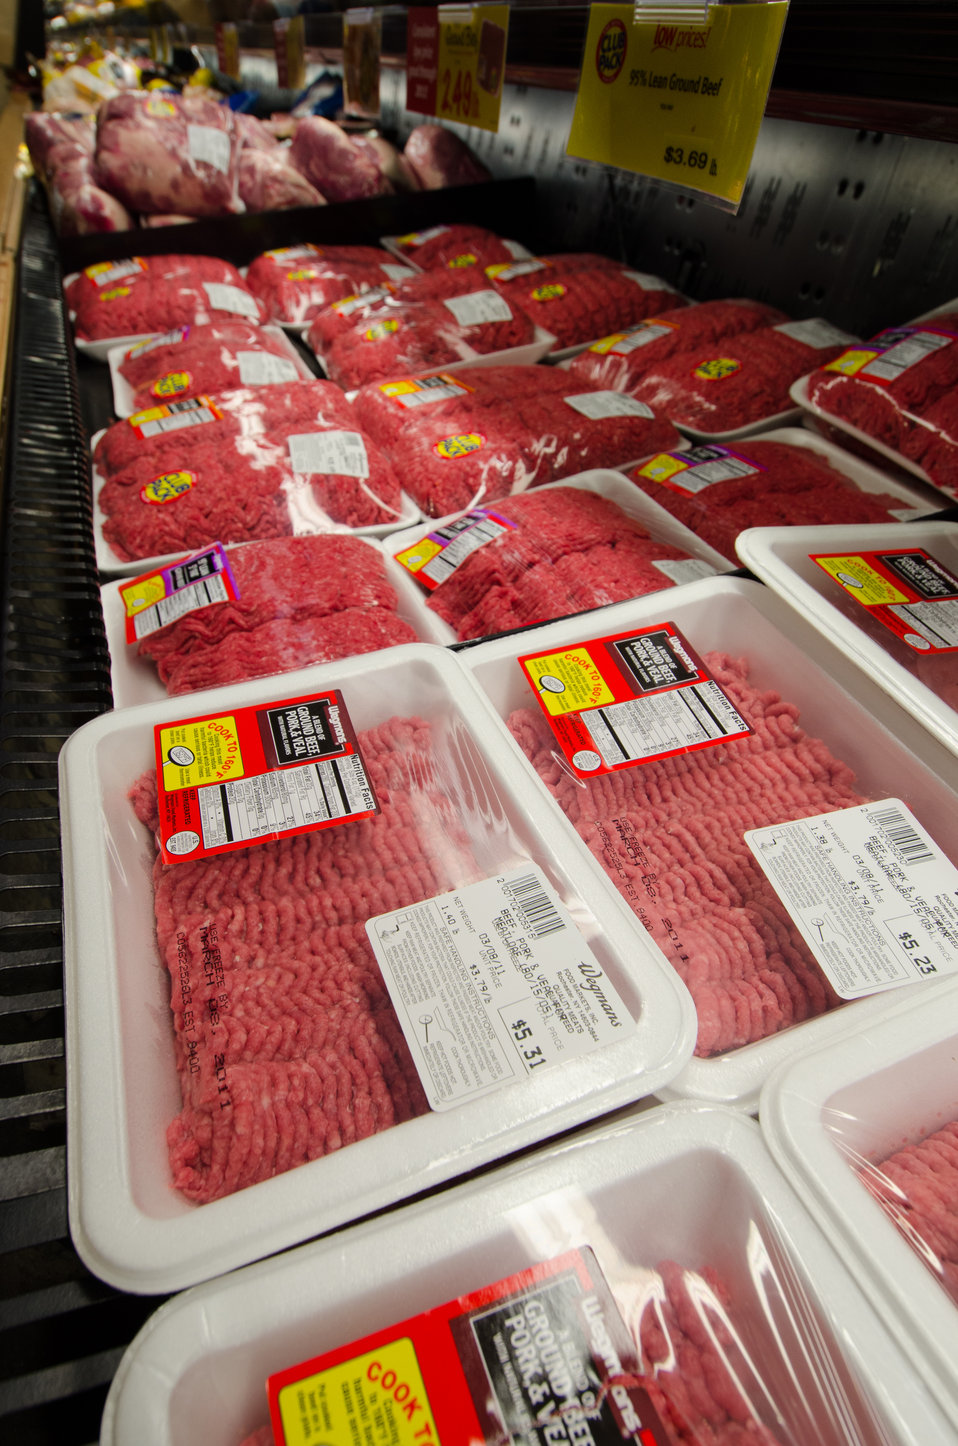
Meat products at a grocery store in Fairfax, Virginia, on March 3, 2011.